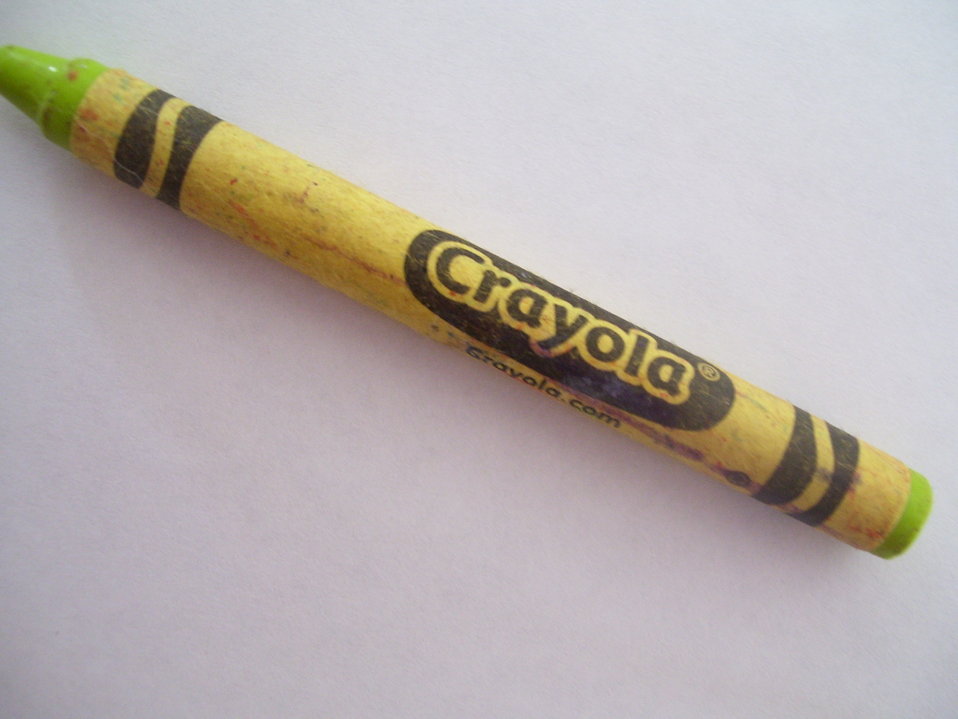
This is my own work.i took it myself,so feel free to use it.